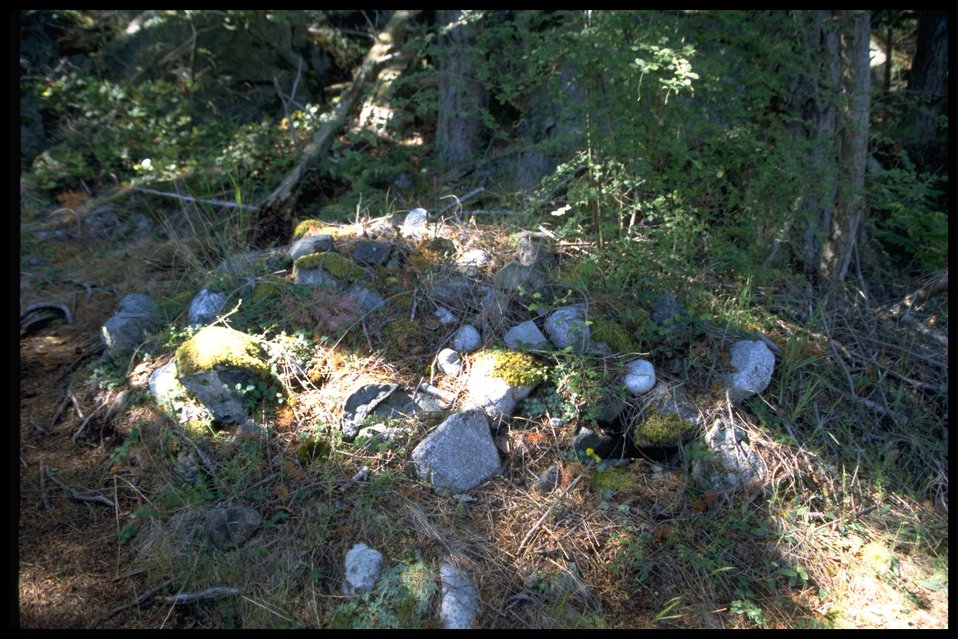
A debris pile covering a possible cultural site at Watmough Bay.